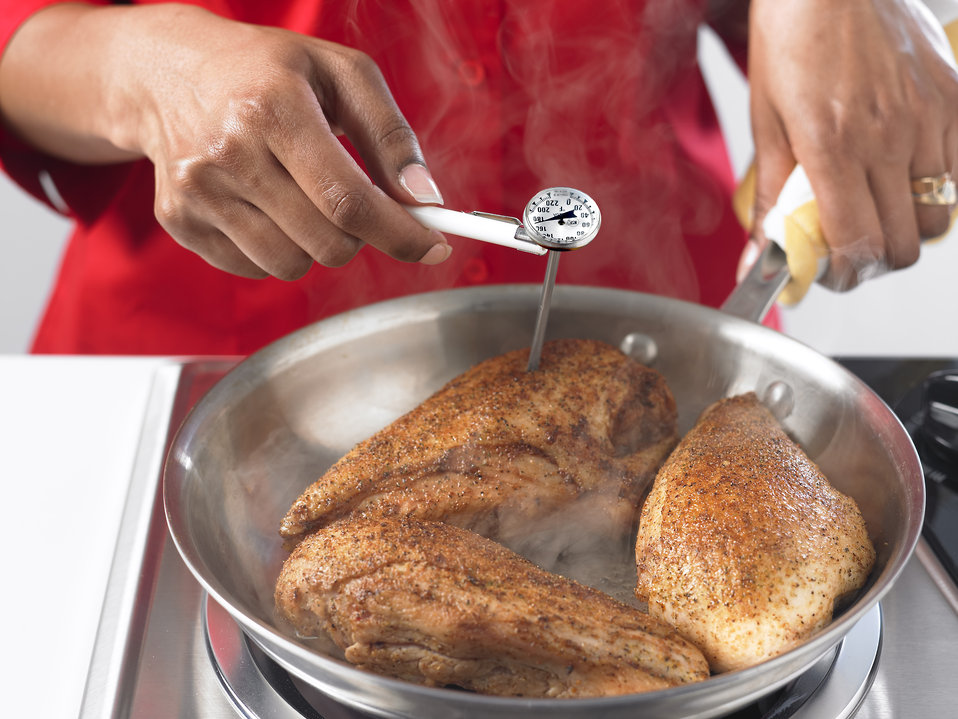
The U. S. Department of Agriculture (USDA) Food Safety Inspection Service (FSIS) recommends an internal cooked temperature of 165 to 180 degrees for poultry. The food thermometer pictured here quickly measures the temperature of a food in about 15 to 20 seconds. It is not designed to remain in the food while it is cooking in the oven, but should be used near the end of the estimated cooking time to check for final cooking temperatures. To prevent overcooking, check the temperature before the food is expected to finish cooking. Always check manufacturer’s instruction before use.